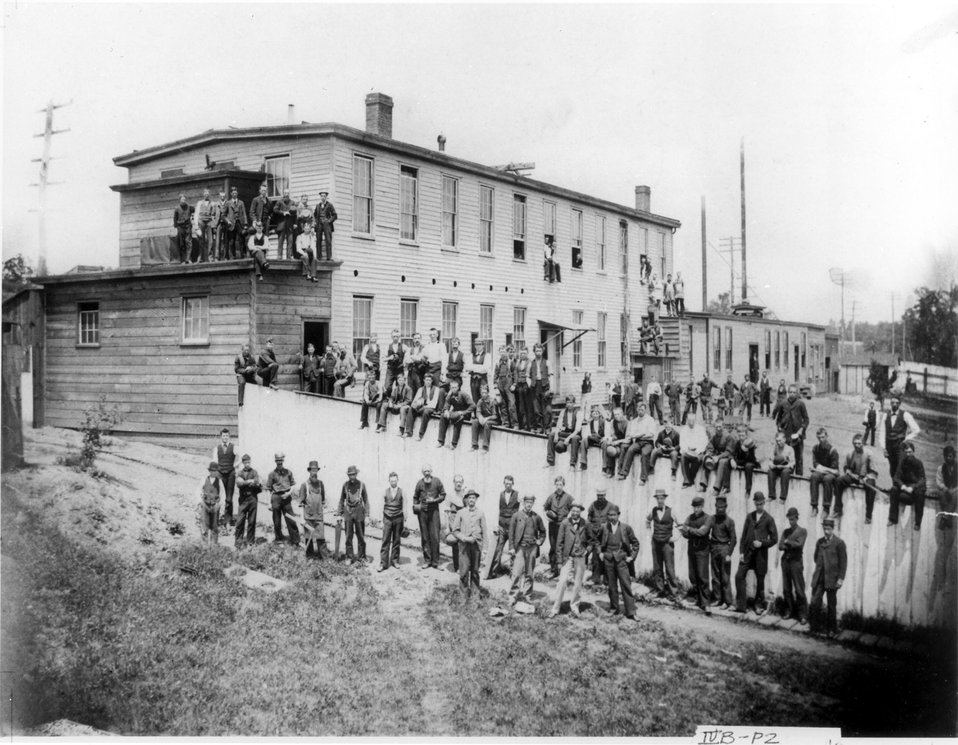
Workers outside of Menlo Park Lab, 1880.